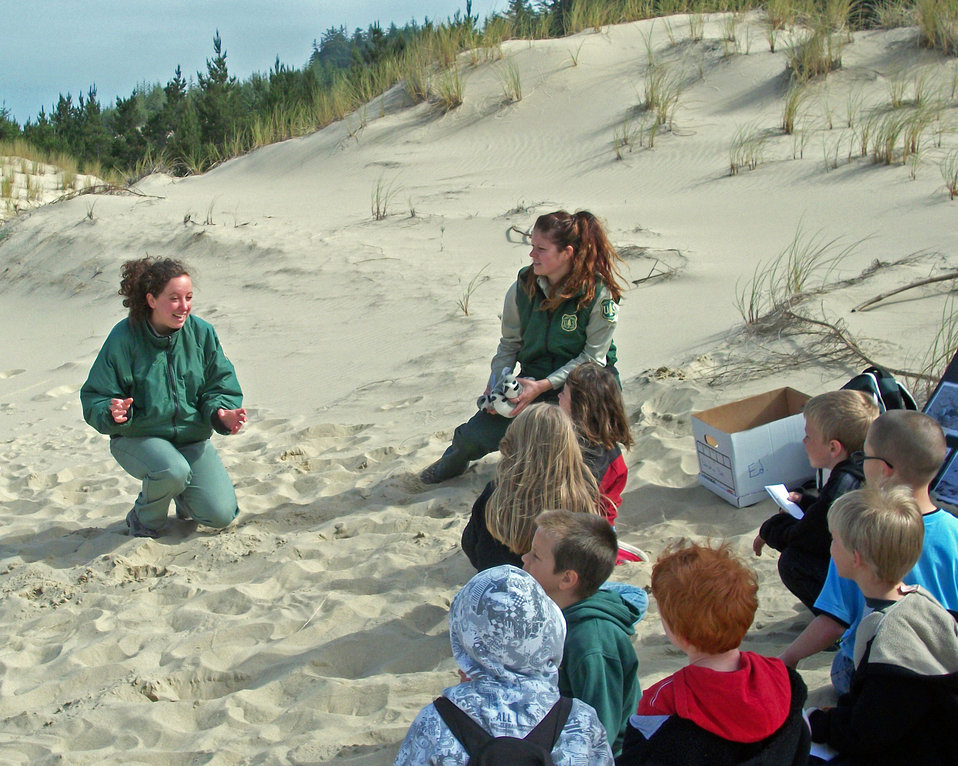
Ore Dunes NRA students Game

U.S. Forest Service Field rangers Eliza Spear and Meghan Avila teach Siuslaw Elementary second graders about Snowy Plovers shorebirds.